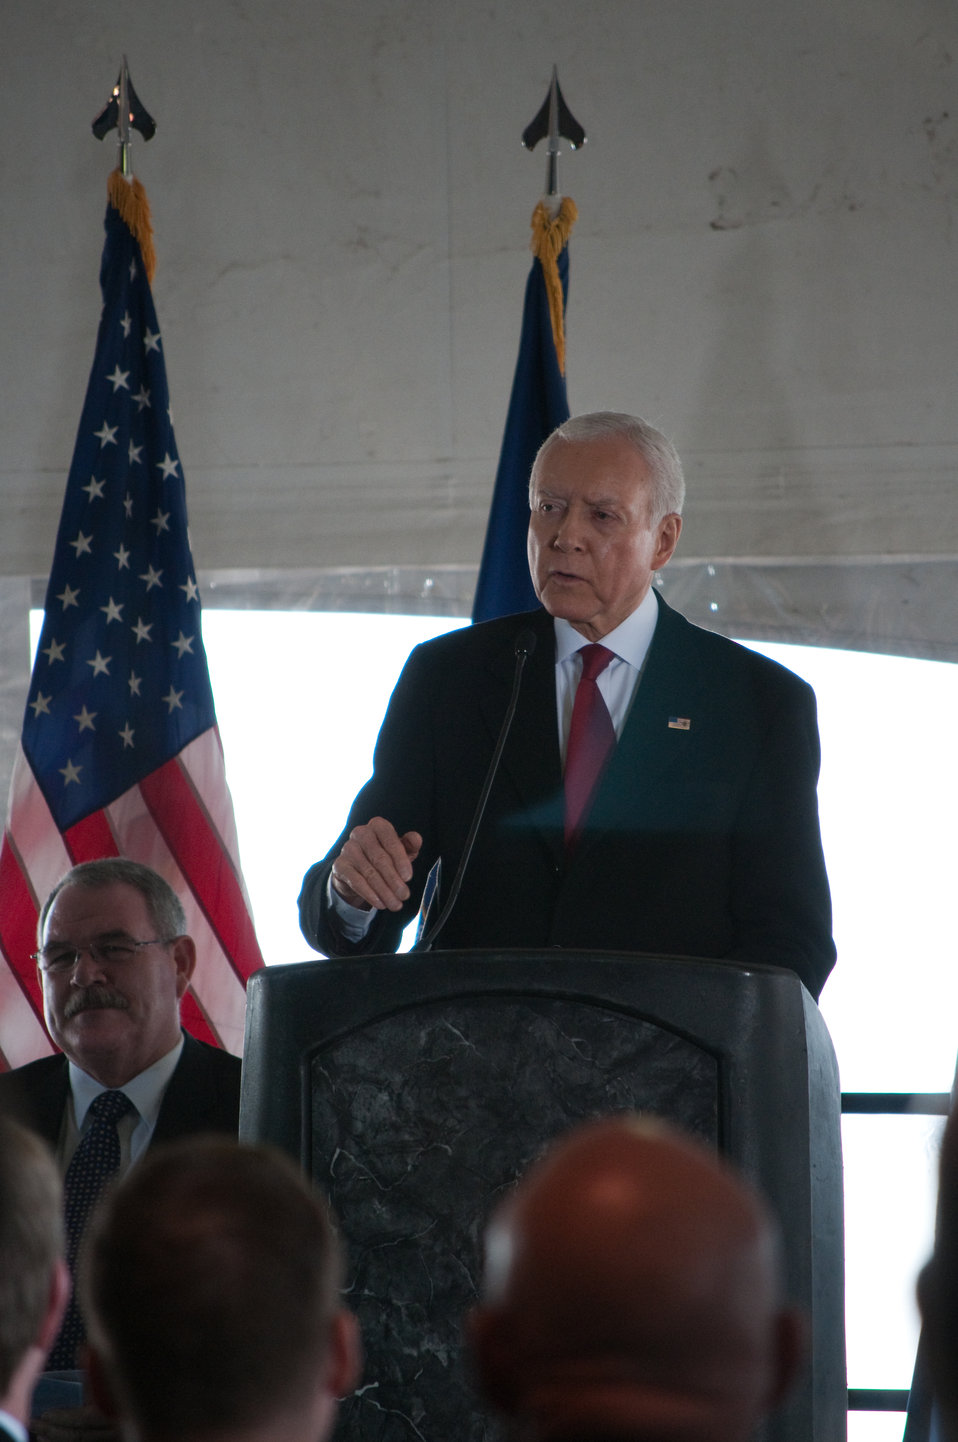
SALT LAKE CITY (Jan. 7, 2011) – Senator Orrin Hatch of Utah addresses attendees during a ground breaking ceremony for a new $1.2 billion data center at Camp W.G. Williams here Jan. 6. More than 200 people attended the event, signaling the official start of construction on the state-of-the-art facility designed to support the intelligence community’s efforts to further strengthen and protect the nation’s cyber security. Sen. Hatch emphasized the number of jobs construction of the project would create locally, estimated to range from 5,000 to 10,000. The U.S. Army Corps of Engineers is the construction agent responsible for handling the acquisition and contracting process, design management and review, and project management for the facility.